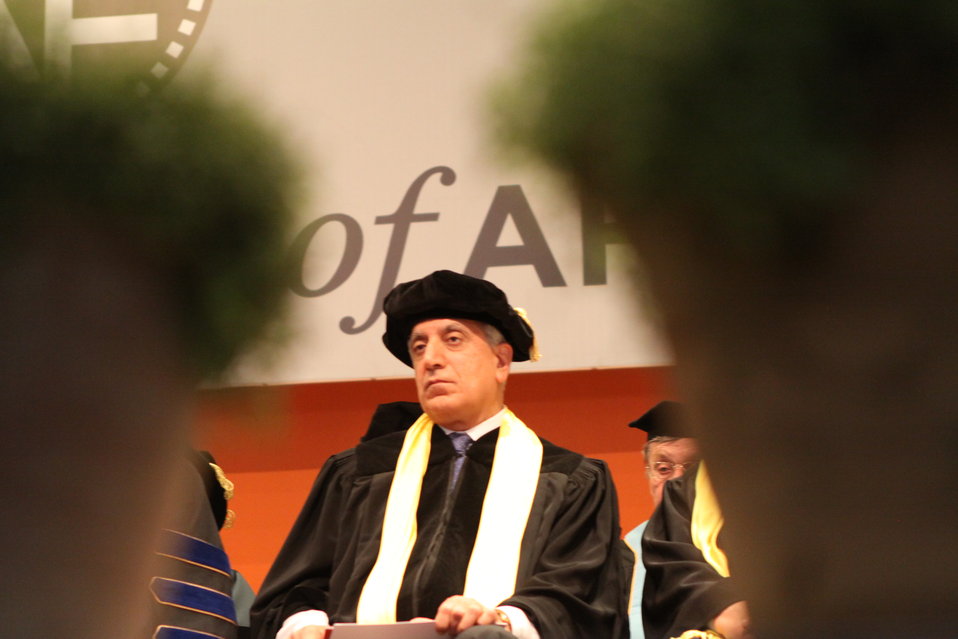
100526 AUAF Graduation 162